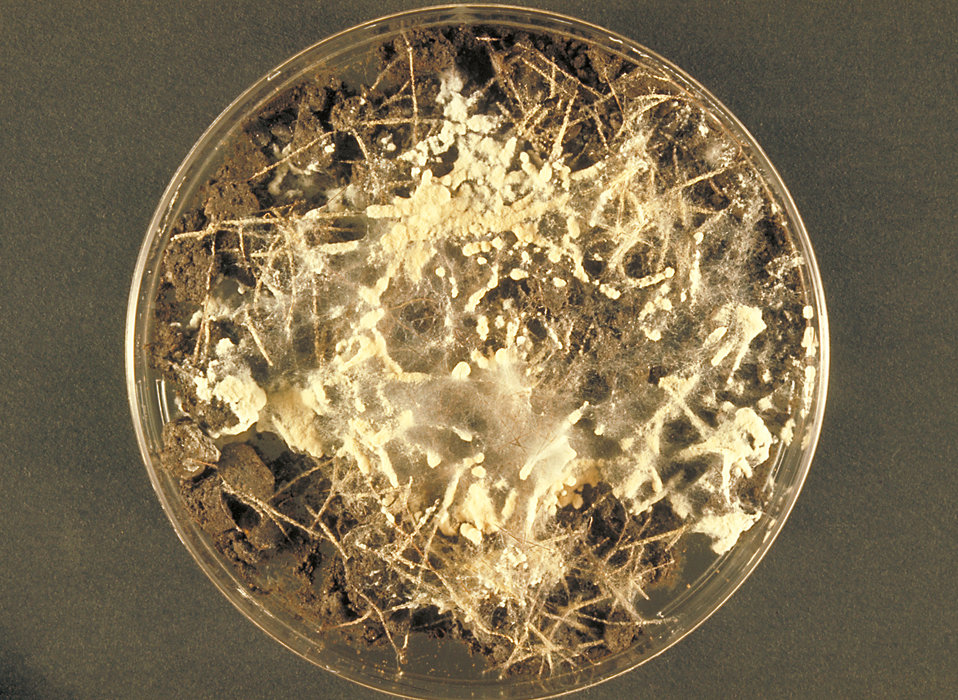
This image shows a soil hair plate culture growing the fungus Microsporum gypseum.